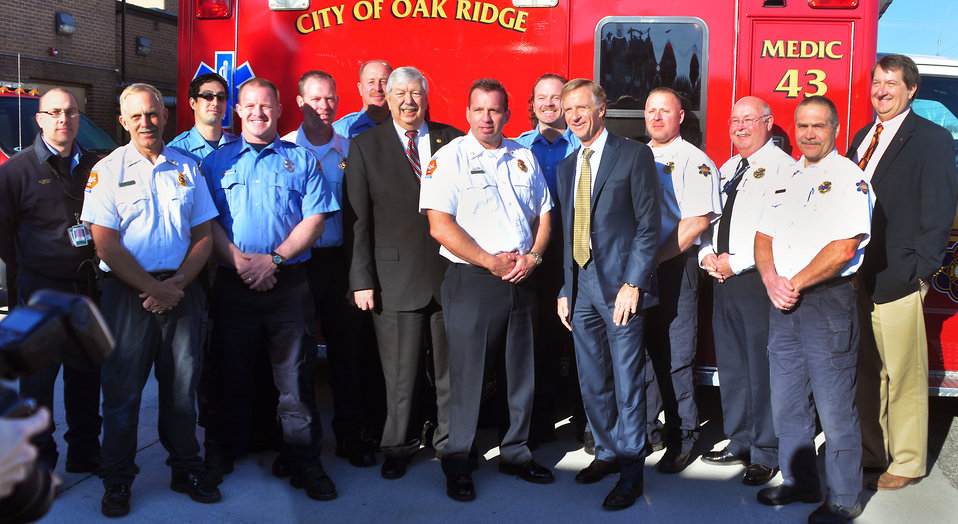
Gov. Bill Haslam Visit to ETTP 2014 Oak Ridge

14-037 DOE photo Lynn Freeny 3-21-2014 Oak Ridge Tennessee